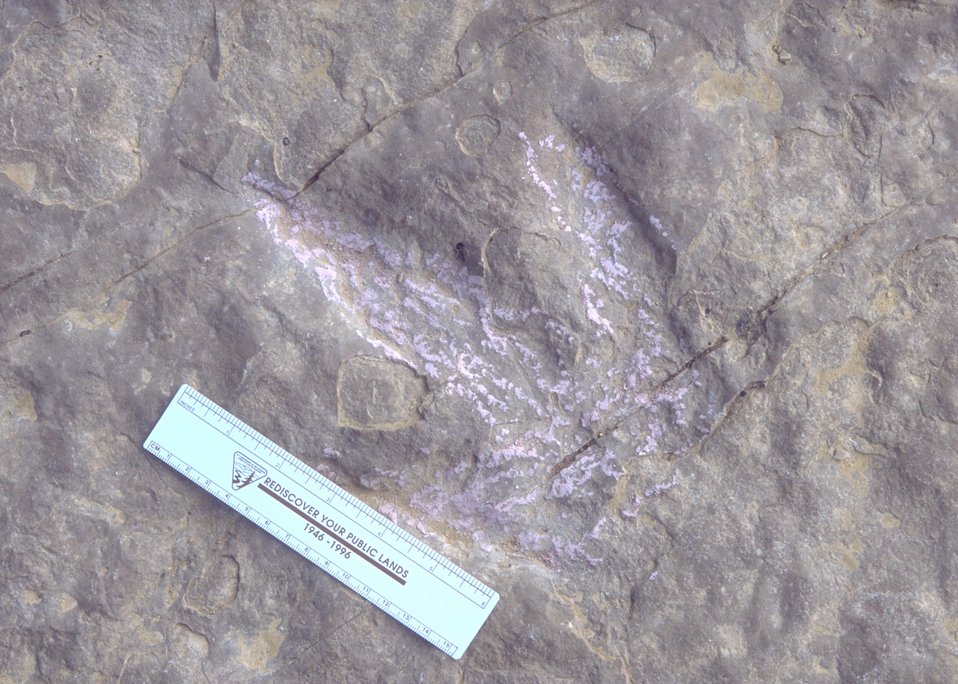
Detail of dinosaur track at the Red Gulch Dinosaur Tracksite, Worland Field Office.